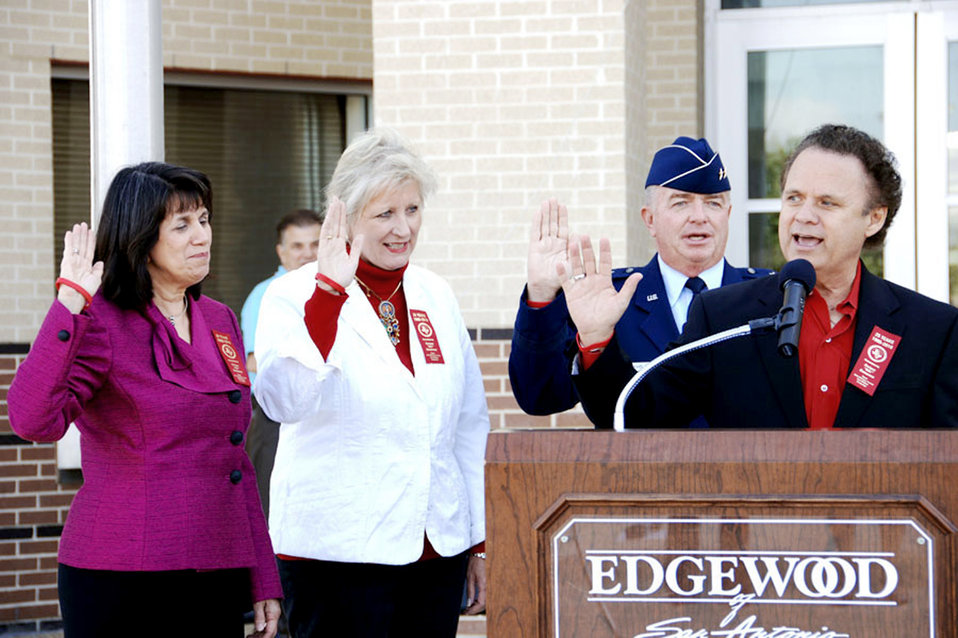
Air Force musicians take a visible stand against drug abuse

San Antonio community leaders pledge to be positive role models as they recite the Red Ribbon pledge during a news conference Oct. 18, 2010, at the Edgewood Performing Arts Theater in San Antonio. Leading the pledge is emcee and radio personality Sonny Melendrez (right,) with Maj. Gen. Thomas Travis, San Antonio District Attorney Susan Reed (left) and Dr. Elizabeth Garza, (far left). General Travis is the 59th Medical Wing commander and Mrs. Garza is the Edgewood Independent School District superintendent.